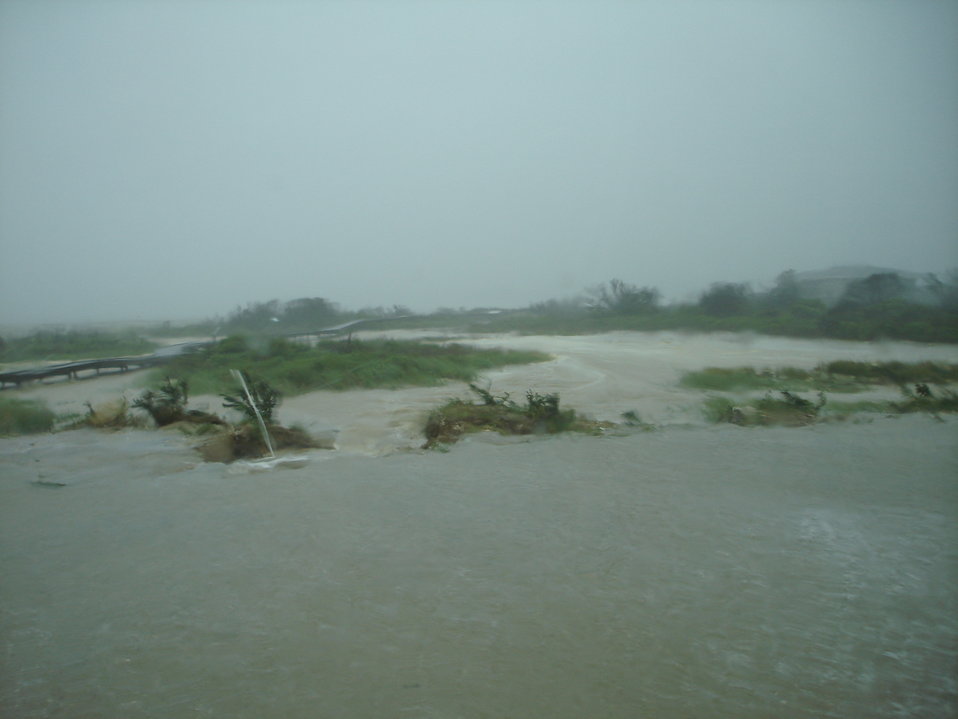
Flooded boardwalk near Toms Cove Visitor Center at Chincoteague National Wildlife Refuge in Virginia (see visitor center in the background). The flooding was caused by Hurricane Irene.